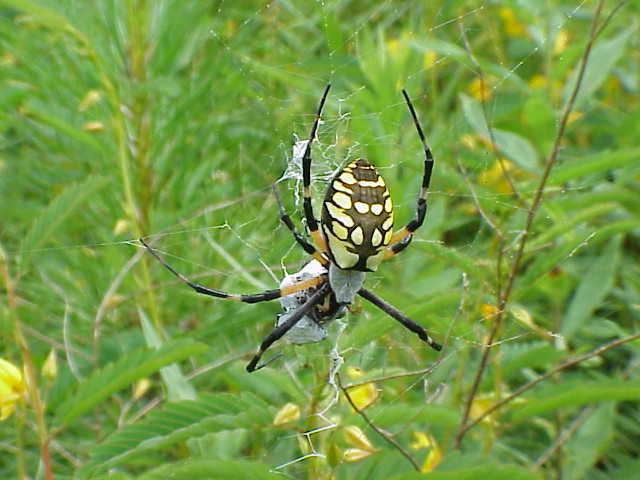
Black and yellow garden spider at Back Bay National Wildlife Refuge in Virginia.